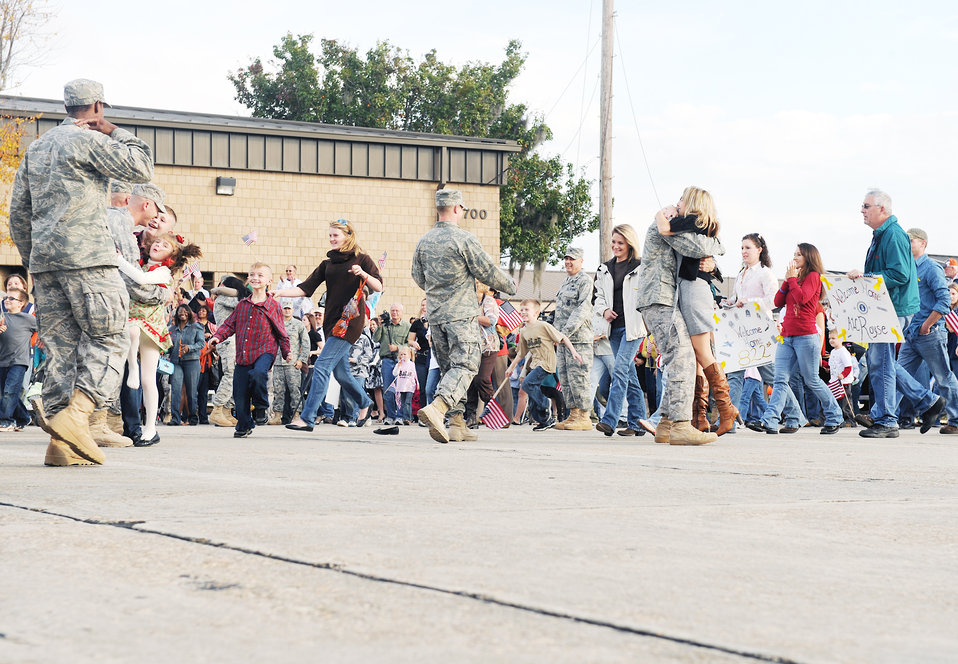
Welcome back!

Families and friends run to greet Airmen returning from a deployment Dec. 8, 2009, at Moody Air Force Base, Ga. The 822nd Security Forces Squadron Airmen were deployed to Camp Bucca, Iraq, and during the deployment, the squadron performed joint expeditionary taskings, outside-the-wire security operations and convoy escort.